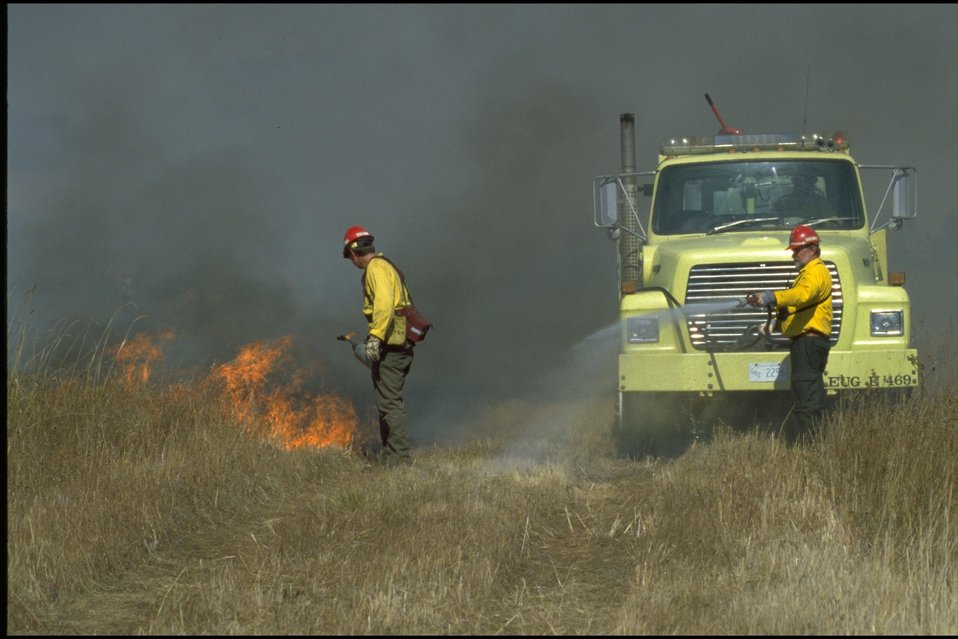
Spectra Physics Burn - Wetlands.